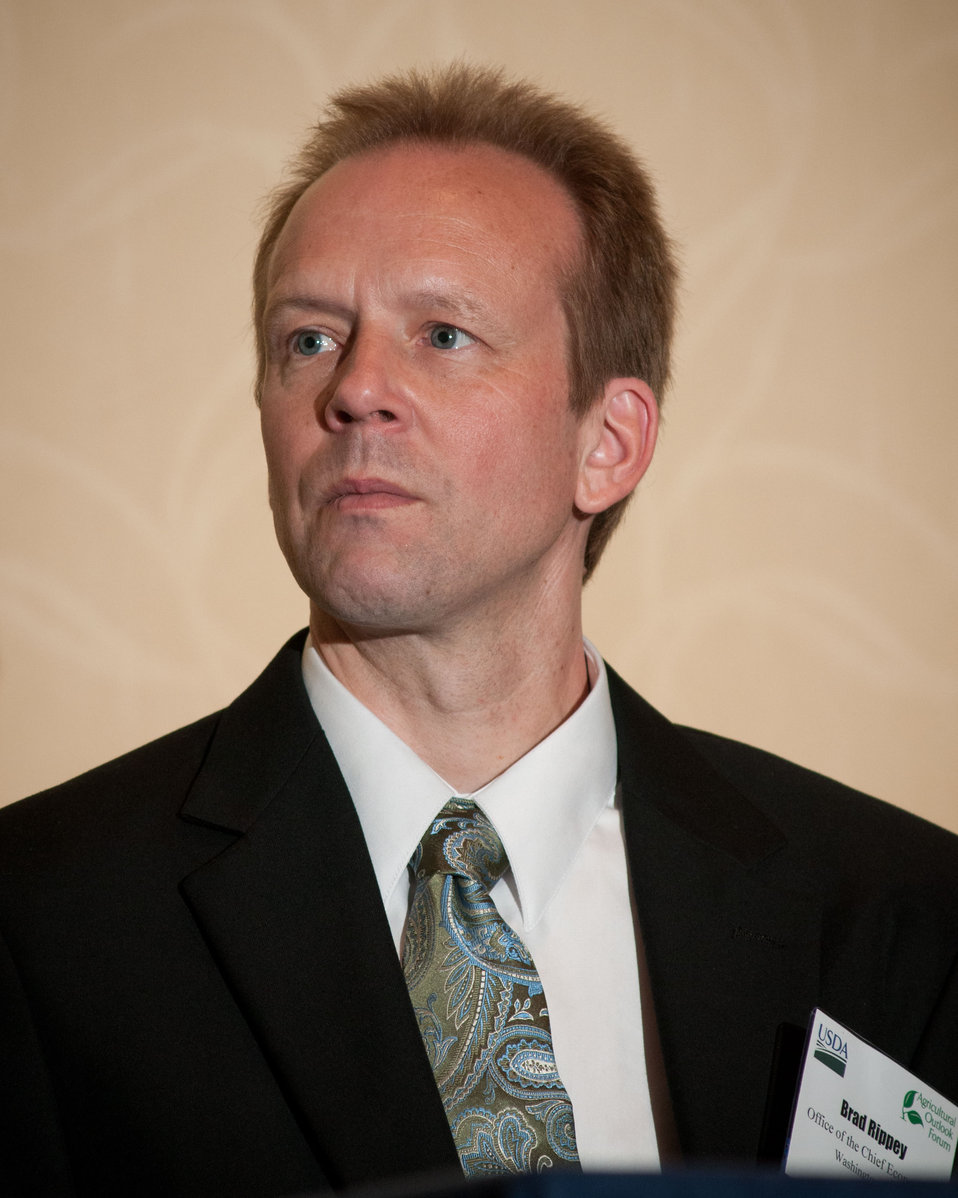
The U.S. Department of Agriculture (USDA) Office of the Chief Economist (OCE), Agricultural Meteorologist Brad Rippey, during the 2013 Agricultural Outlook Forum was held at the Crystal Gateway Marriott Hotel in Arlington, VA on Friday, Feb. 22, 2013. The breakout session is generally focused on the Weather Outlook for 2013. The presentation is available at www.usda.gov/oce/forum/presentations/Rippey2.ppt.